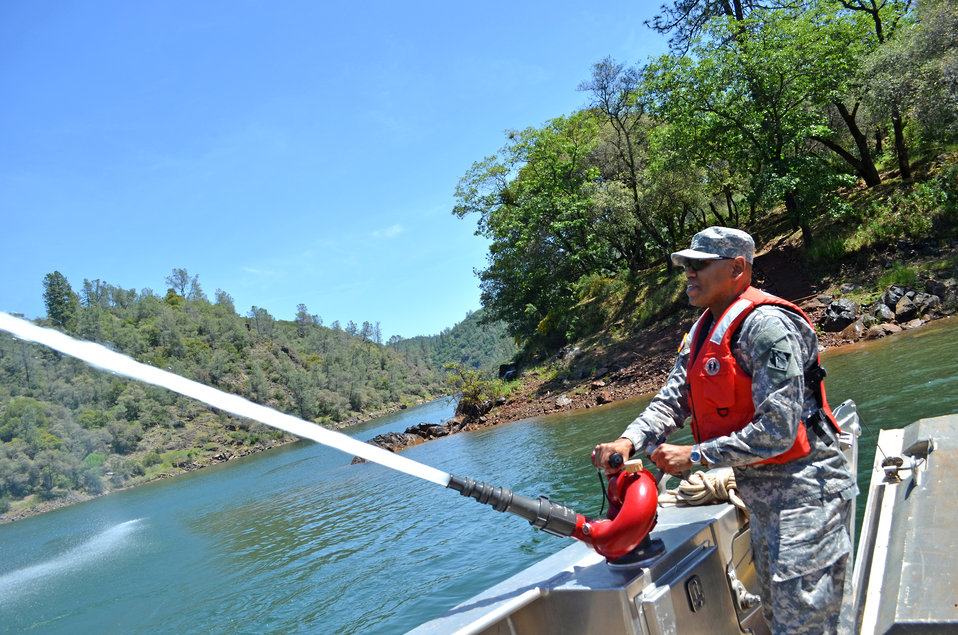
Brig. Gen. David Turner tours Englebright Lake

Brigadier Gen. David Turner fires a hose on a work barge during a tour of the U.S. Army Corps of Engineers’ Englebright Lake near Smartsville, Calif., April 30, 2014. Park staff use the work barge and the hose to help maintain and clean campsites and other recreation areas that are only accessible by boat. The barge can also be used to help provide firefighters access to water at remote areas of the lake. Turner met with Englebright Lake park staff and was briefed on the facility’s dam and recreation operations.